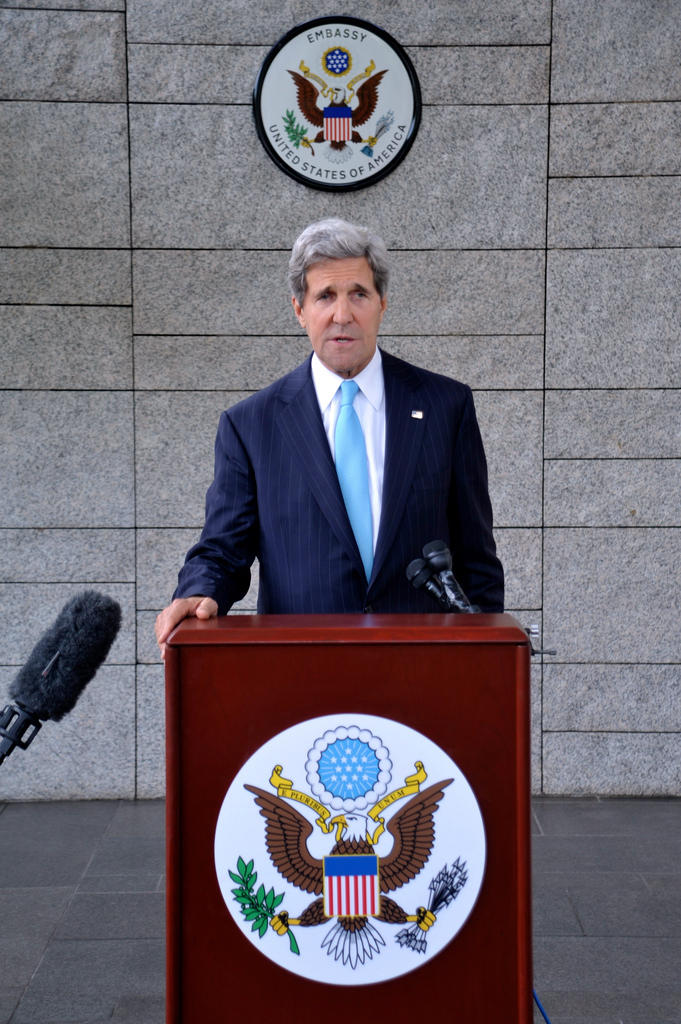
Secretary Kerry Makes Syria Statement During Press Conference

U.S. Secretary of State John Kerry makes a statement about Syria to reporters at the U.S. Embassy in Bandar Seri Begawan, Brunei, following his meeting with Russian Foreign Minister Sergey Lavrov on July 2, 2013.